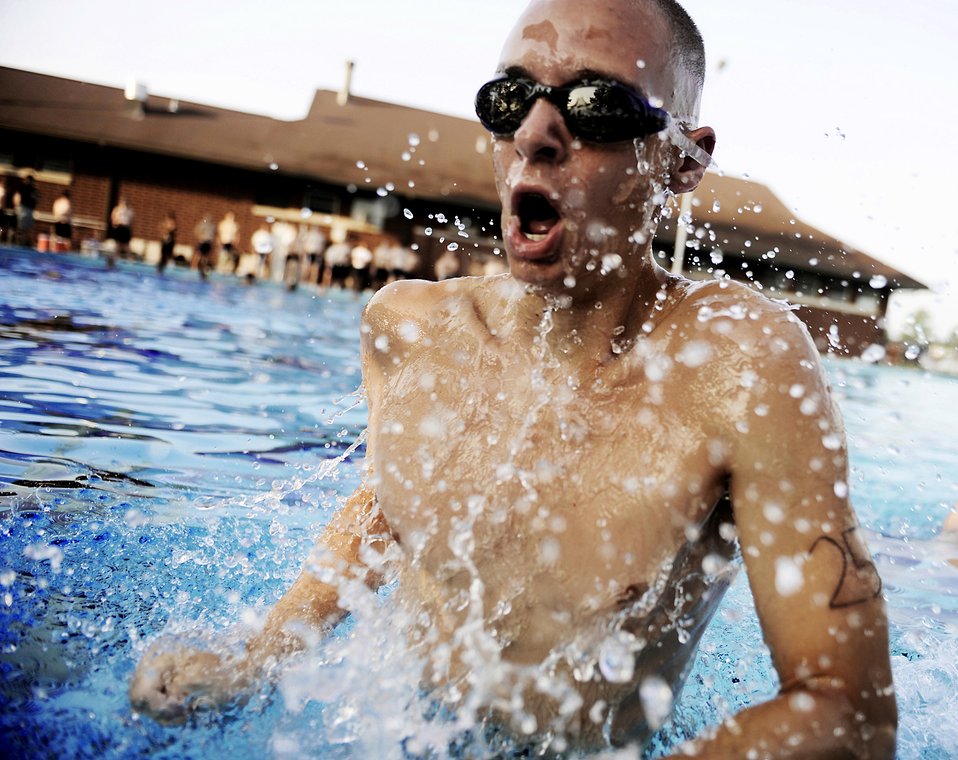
Whew!

A battlefield Airman trainee gasps for breath after completing the underwater swim portion of his physical ability and stamina test June 2, 2010, at Little Rock Air Force Base, Ark. He was one of a select group of future Airmen who were allowed to train with current special operators here. The training prepares them for the indoctrination course that they will go through for their specific career field.